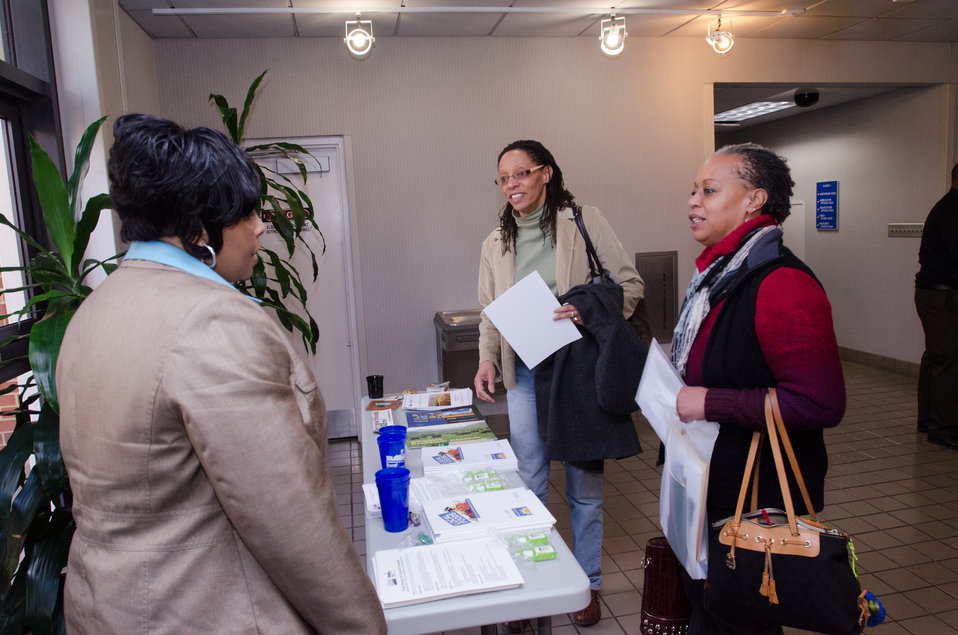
Staffers and farmers came together for the “Virginia State University (VSU), U.S. Department of Agriculture (USDA) and Virginia Farmers Working Together” outreach workshop in the VSU, L. Douglas Wilder building on Thursday, March 7, 2013, in Petersburg, VA. Farmers shared and learned new ways to do more with USDA services, and how to apply for programs that will help grow their business.